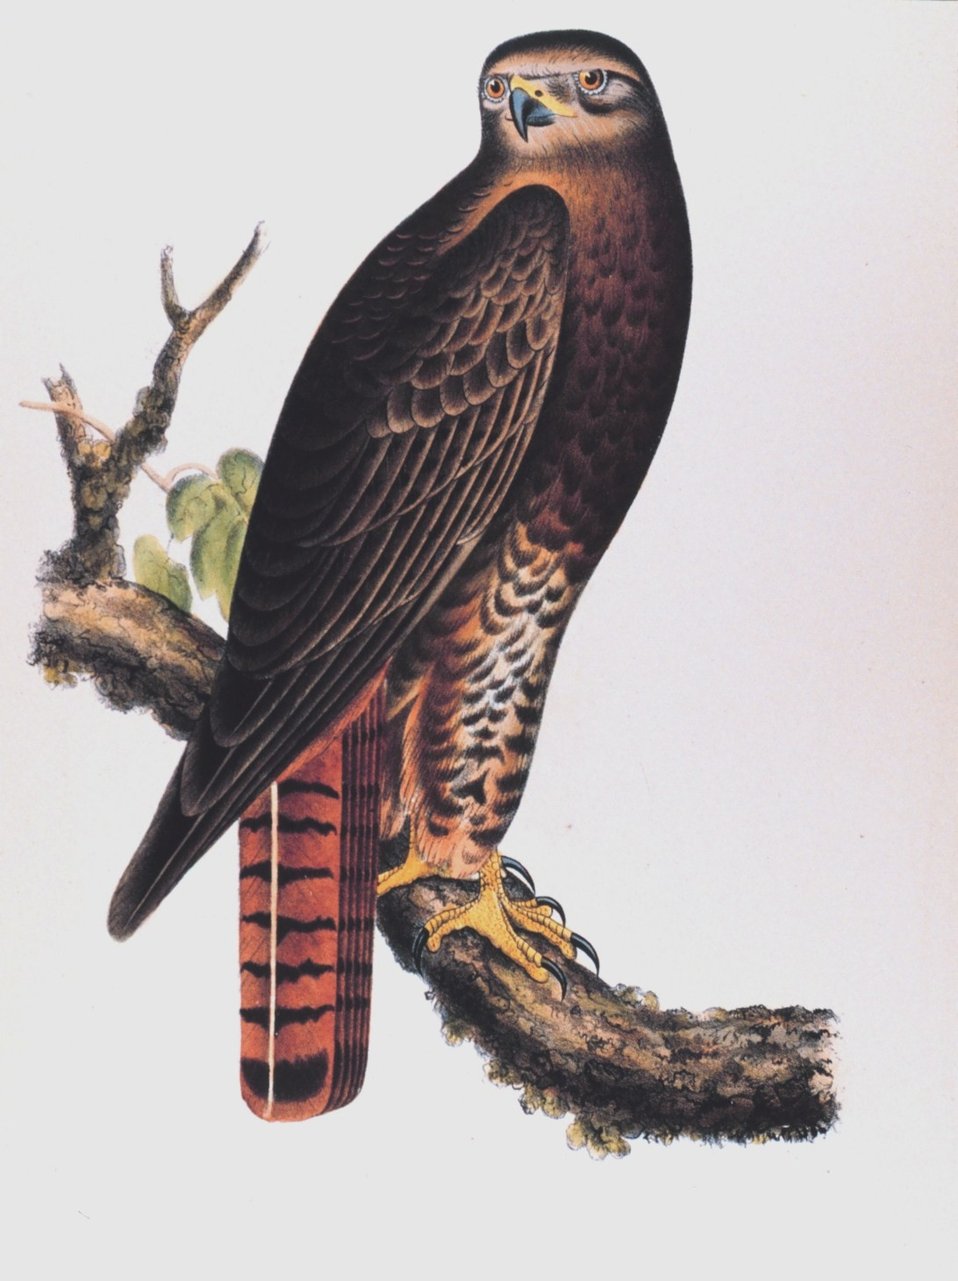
Buteo calurus, Cassin. Red-tailed Black Hawk. This image was included in: Reports of Explorations and Surveys .... Volume X. 1859. Plate XIV. P. 16 of U. S. Pacific Railroad Explorations and Surveys 38th,39th, 41st Parallels. Call Number F593 .U58 1855 .